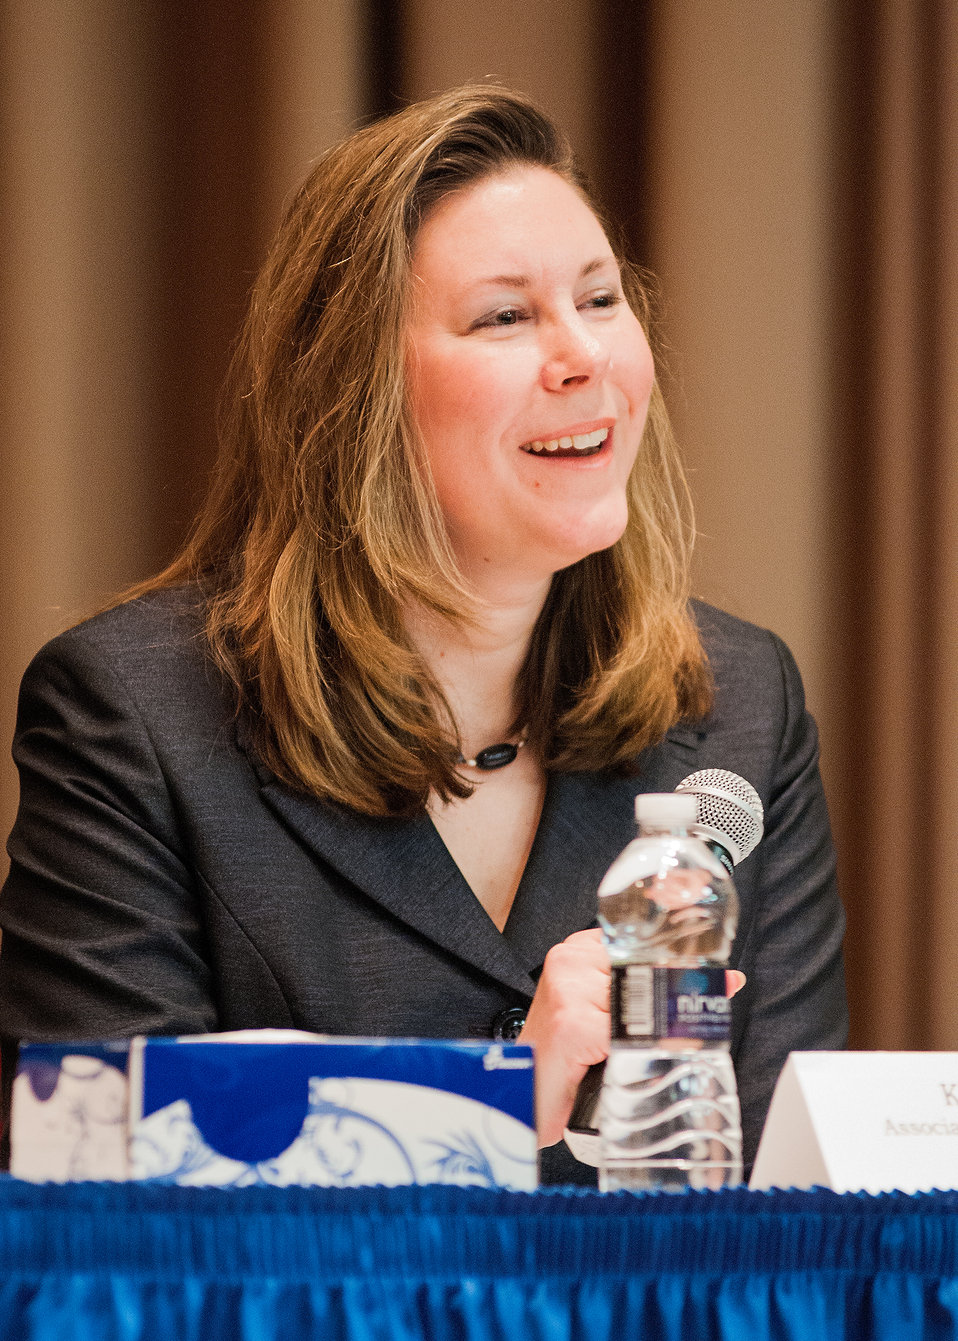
U.S. Department of Agriculture (USDA) Associate Chief Financial Officer (Mathematics) Ms. Kim Farington was one of four panel members at the USDA’s Office of the Chief Information Officer (OCIO) National Women’s History Month celebration at the USDA Jefferson Auditorium in Washington, D.C. on Thursday, Mar. 14, 2013. The theme of this year’s celebration is, “Recognizing American Women’s Outstanding Contributions to the Field of Science, Technology, Engineering and Mathematics,” commonly referred to as STEM. Each panel member answered four questions: Who in History was a good role model? What were your biggest hurdles being in Science, Technology, Engineering and Mathematics (STEM) ? And for women today what is your single piece of advice? All panel members mentioned setting professional and personal goals, strength of family and loving their career choices.